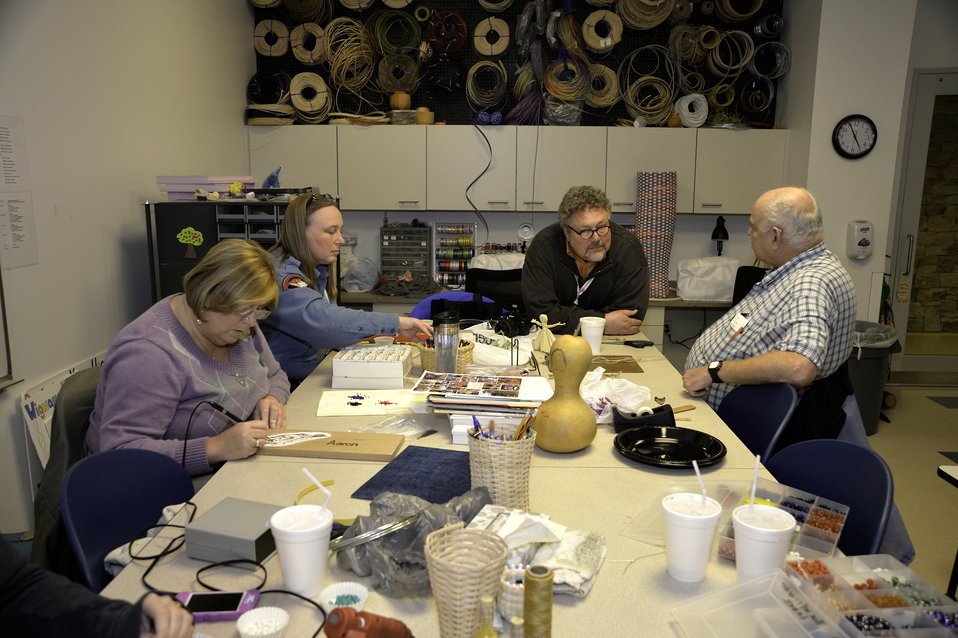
Mohegan members work on Native American crafts at the Arts and Crafts center in the Mohegan Tribe Community Center and Government Building in Uncasville, CT on Nov. 19, 2013. A U.S. Department of Agriculture (USDA) Rural Development (RD) Community Facility Loan was provided to the Mohegan Tribe for the construction of the Mohegan Tribe Community Center and Government Building in Uncasville, CT. USDA’s RD Community Facilities Programs makes and guarantees loans to develop essential community facilities in rural areas and towns of up to 20,000 in population. Loans and guarantees are available to public entities such as municipalities, counties, parishes, boroughs, and special-purpose districts, as well as to non-profit corporations and tribal governments. The 160,000 square foot building Center hosts an exhibit celebrating federal recognition, history of Mohegan Chiefs, a new Library and Archives space, new Arts and Crafts room, a new gymnasium, and a new community room to enjoy food and family. The Center will continue the Tribe’s plan for growth and meeting the needs of its members.